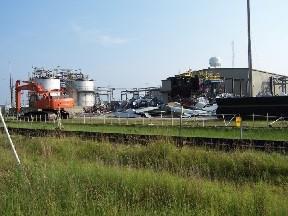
Deactivation and Decommissioning of 341-8M Building's 95-Ton Melter at the Savannah River Site near Aiken, SC.